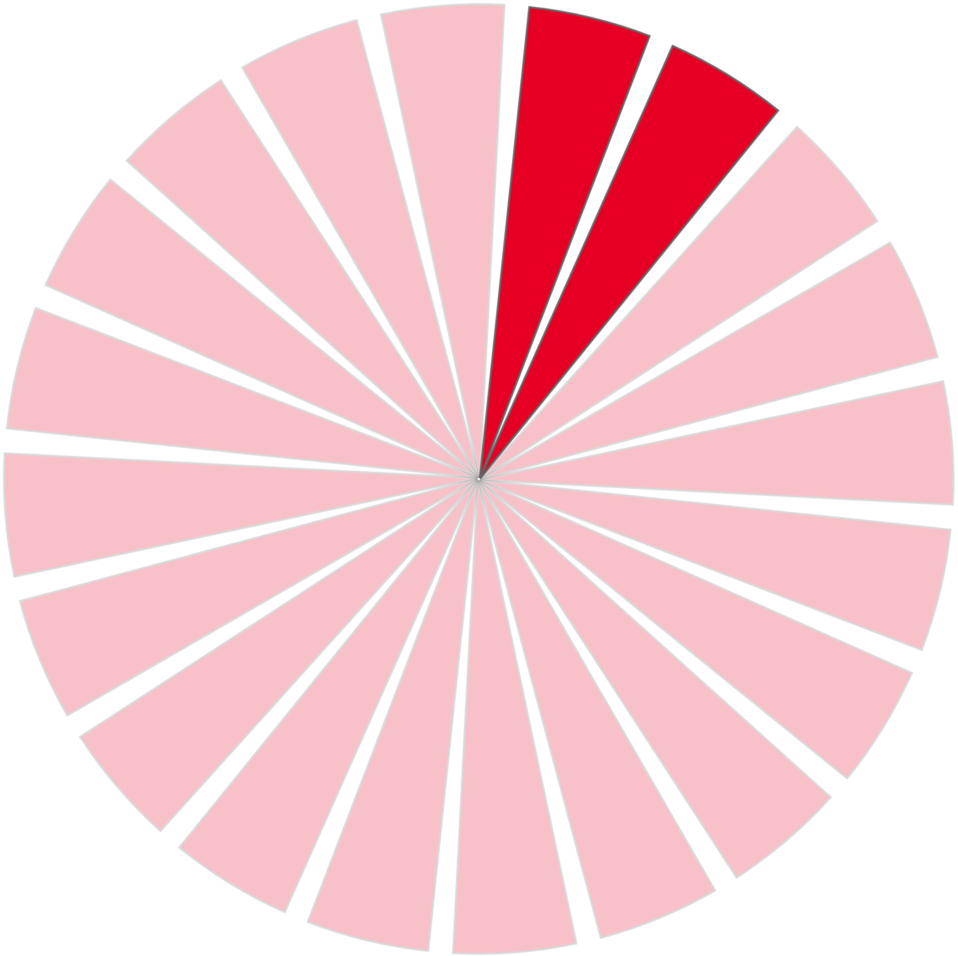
10proc